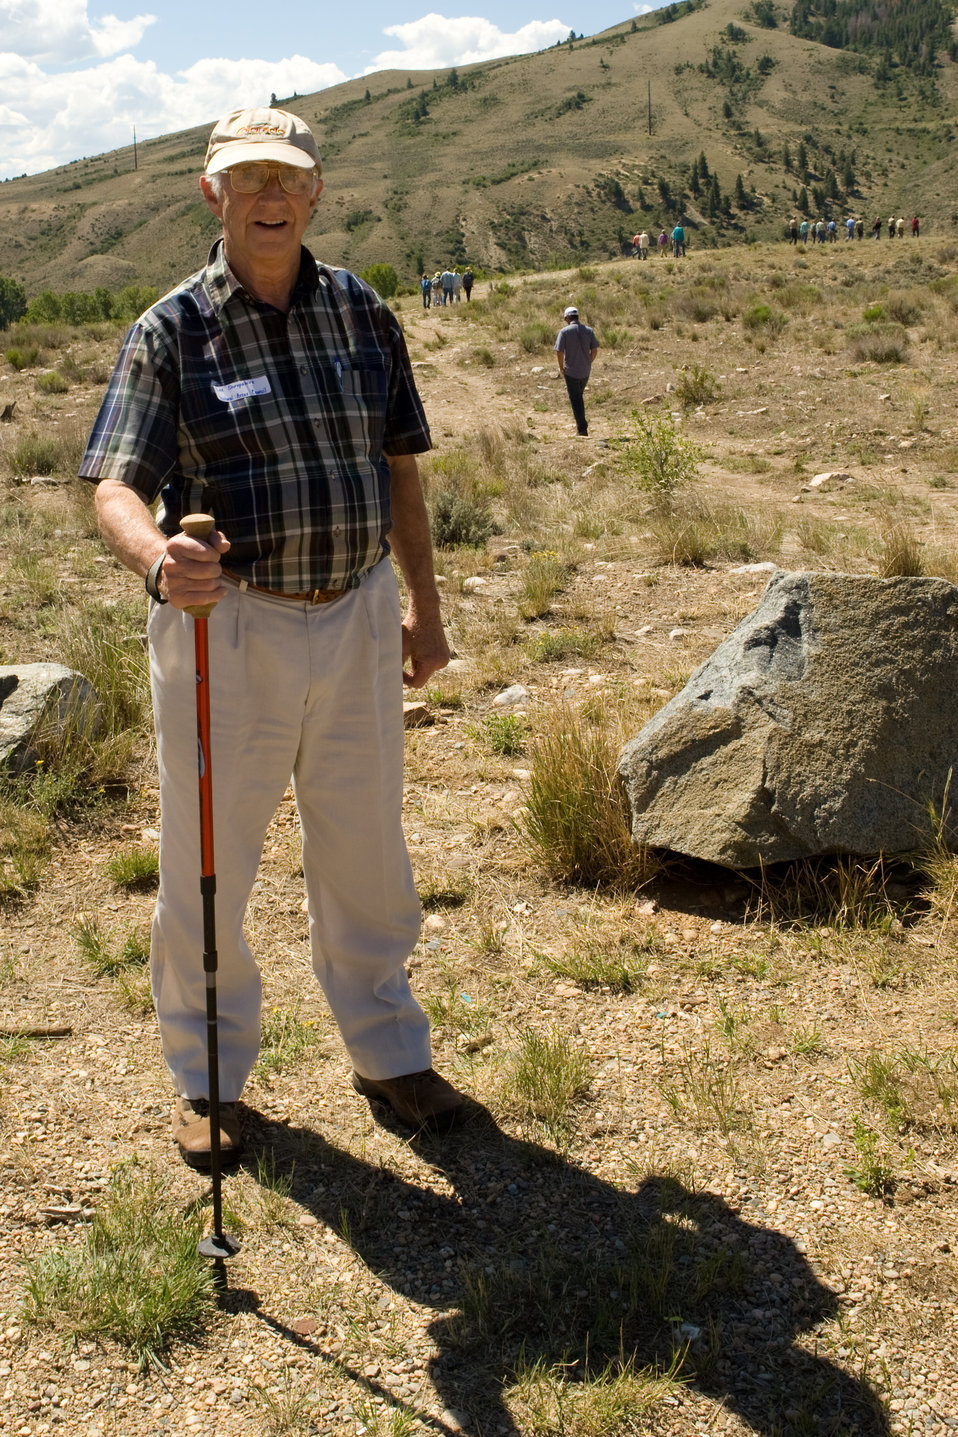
Colorado Rare Plant Conservation Initiative

The Colorado Rare Plant Conservation Initiative (RPCI) is a partnership of 23 statewide and regional agencies, private organizations, and academic institutions working to conserve 121 rare plants in Colorado. As part of these efforts the group developed the Colorado Rare Plant Conservation Strategy, developed Best Management Practices to reduce energy development impacts, addressed climate change, and developed focused strategies for the conservation of individual species at eight priority landscapes. The group has also worked to coordinate volunteer efforts for plant conservation across the state.